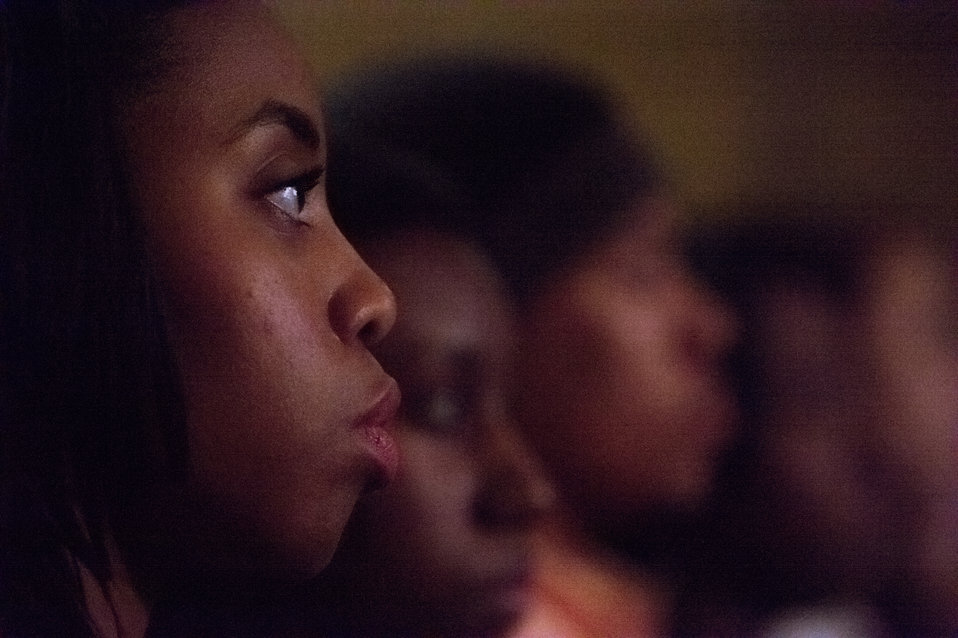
A student listens to the discussion panels at he Borlaug Symposium commemorating the late Dr. Norman Borlaug's 100th Birthday and vision, held in the Jefferson Auditorium of the U.S. Department of Agriculture (USDA) in Washington, D.C. on Tuesday, Mar. 25, 2014. The symposium highlights current efforts addressing global hunger. The symposium panels will feature high school and university students, as well as, scientists and policy advisors at Monsanto Chief Technology Officer Robb Farley talks about mobile communication and it's relationship to agriculture, at the Borlaug Symposium commemorating the late Dr. Norman E. Borlaug's 100th Birthday hosted by the U.S. Department of Agriculture (USDA) in the Jefferson Auditorium of USDA in Washington, D.C. on Tuesday, Mar. 25, 2014. The symposium will highlight current efforts addressing global hunger. The symposium panels will feature high school and university students, as well as, scientists and policy advisors at U.S. Agency for International Development (USAID), USDA and Non-Governmental Organizations (NGO). The symposium was planned in partnership with: U.S. Agency for International Development (USAID), Cornell University, Iowa State University, University of Minnesota, The Norman Borlaug Institute for International Agriculture, Texas A and M University, and the World Food Prize.